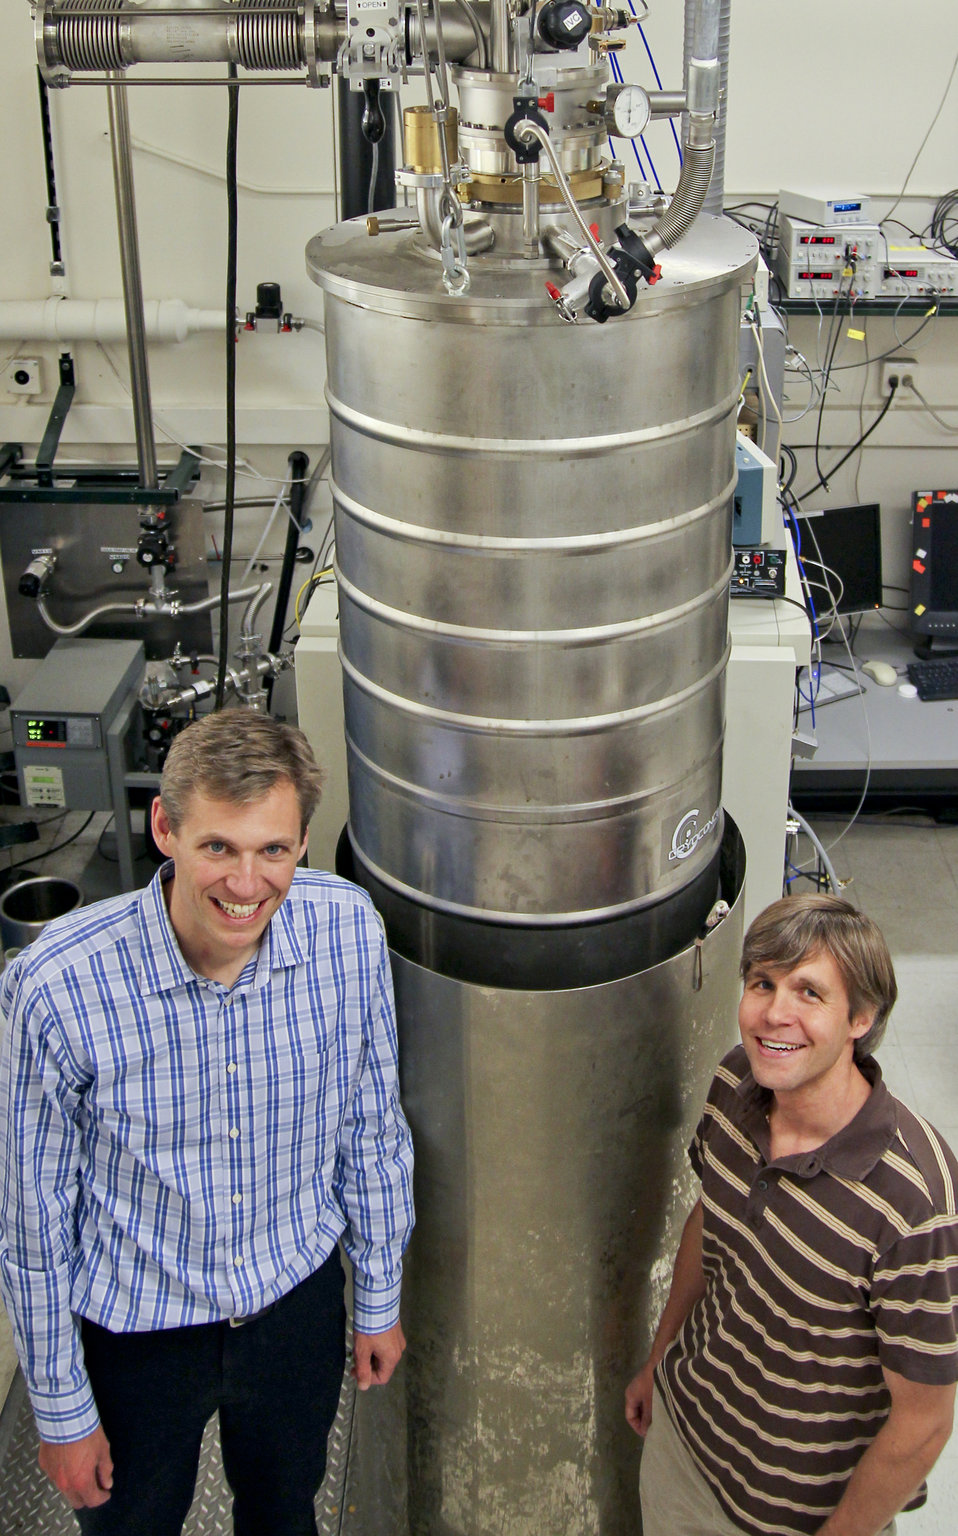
Konrad Lehnert and Tauno Palomaki

NIST physicist and JILA Fellow Konrad Lehnert (left) and post-doctoral researcher Tauno Palomaki in the JILA laboratory where they entangled a microscopic mechanical drum with electrical signals. The micro-drum, just 15 micrometers in diameter and 100 nanometers thick, is chilled and manipulated inside the tall tank.